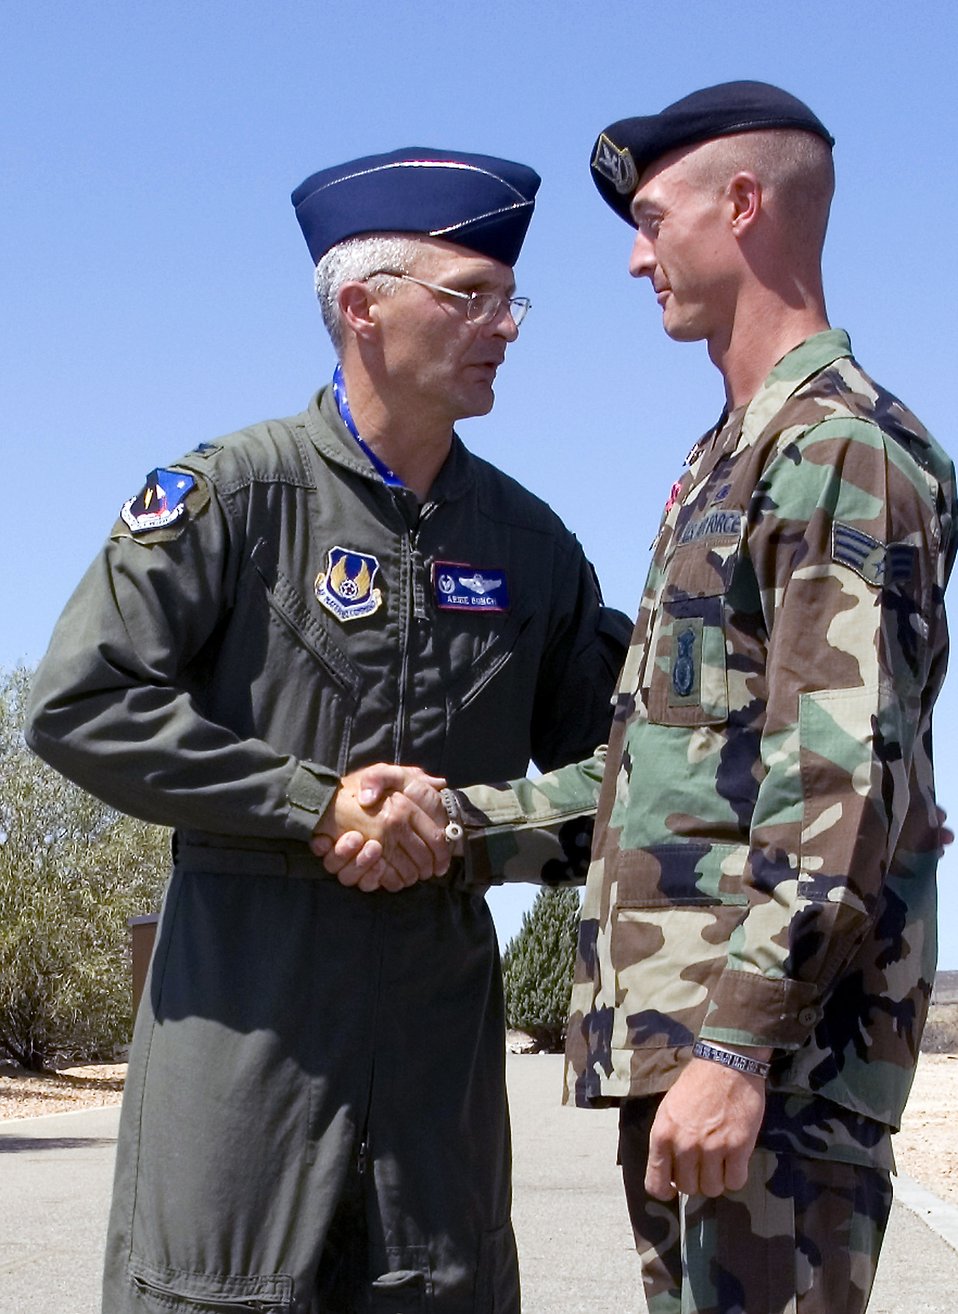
Security forces Airman earns Bronze Star Medal with Valor

Colonel Arnie Bunch, the 412th Test Wing commander, congratulates Senior Airman Phillip King, a patrolman with the 95th Security Forces Squadron, during a July 30 ceremony at Edwards Air Force Base, Calif. Airman King received a Bronze Star Medal with Valor for his gallantry during a deployment in Afghanistan supporting Operation Enduring Freedom.